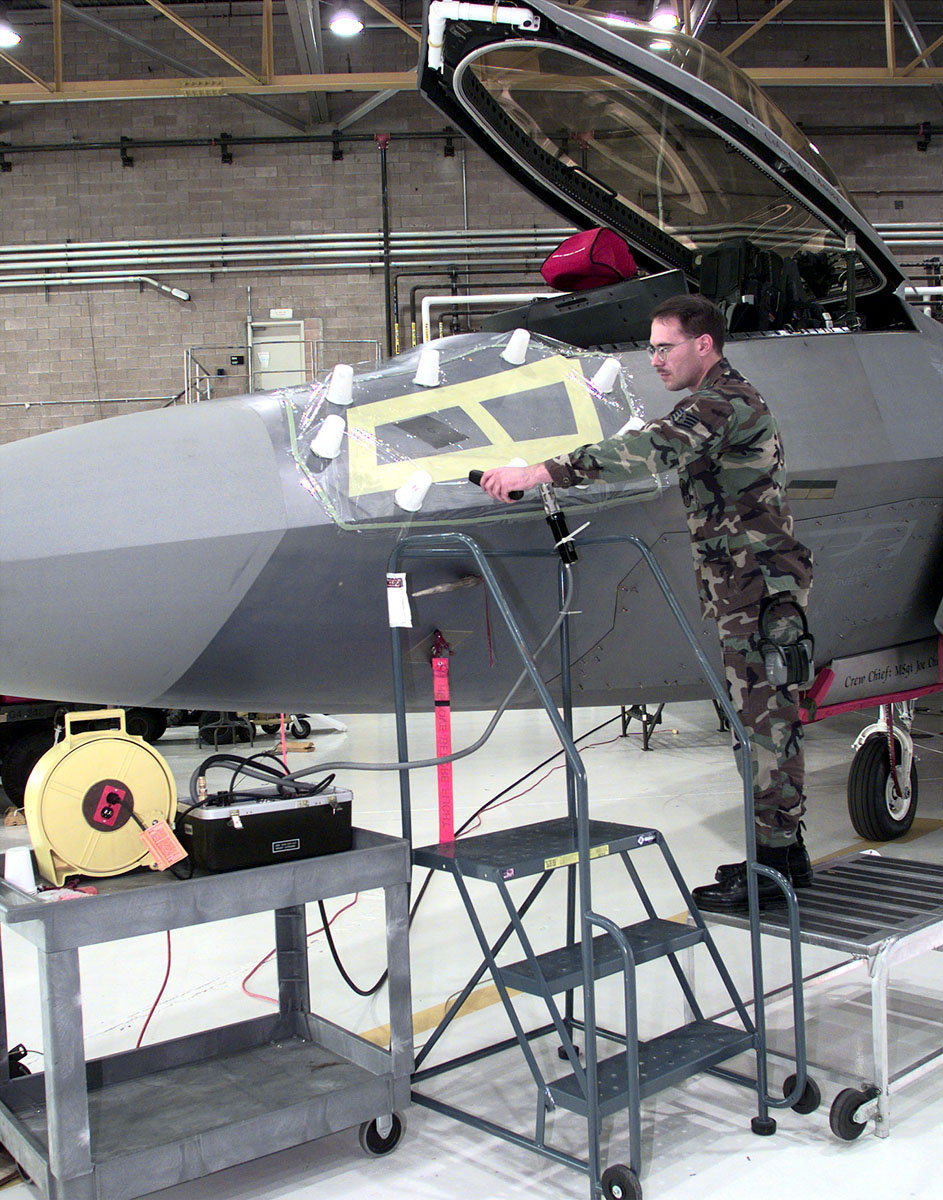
Raptor cured

EDWARDS AIR FORCE BASE, Calif. -- Tech. Sgt. Dan Stevens, 411th Flight Test Squadron, uses a non-contact infrared thermometer while curing the coating on an F/A-22 Raptor. To ensure the base continues flight-testing large programs such as the F/A-22, the 412th Test Wing is re-engineering the way it does business.